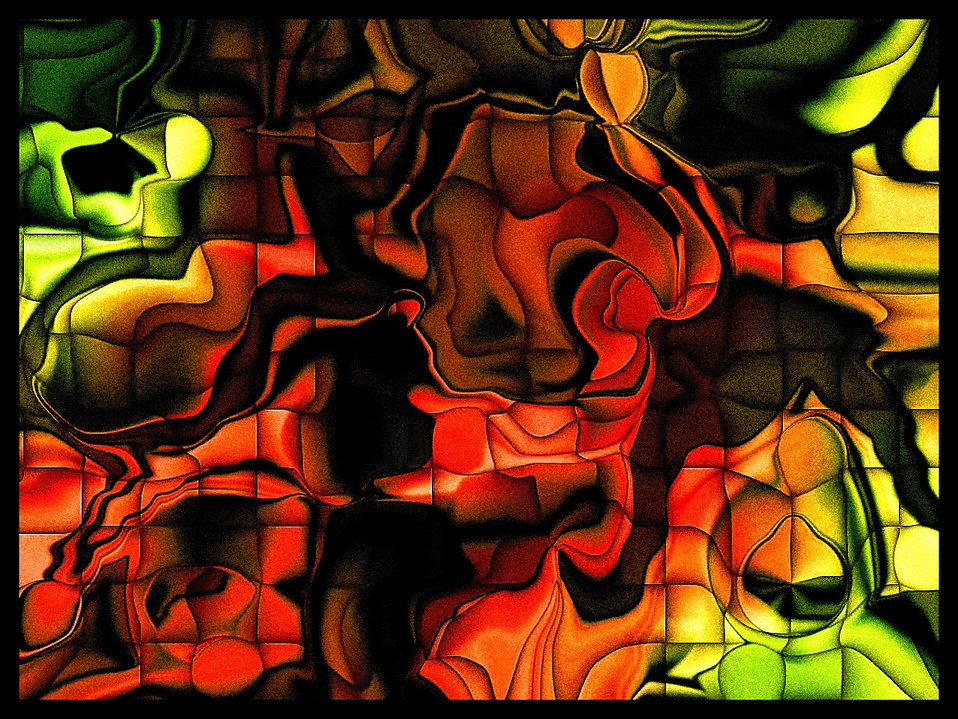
Digital painting background

Wallpaper light grit.